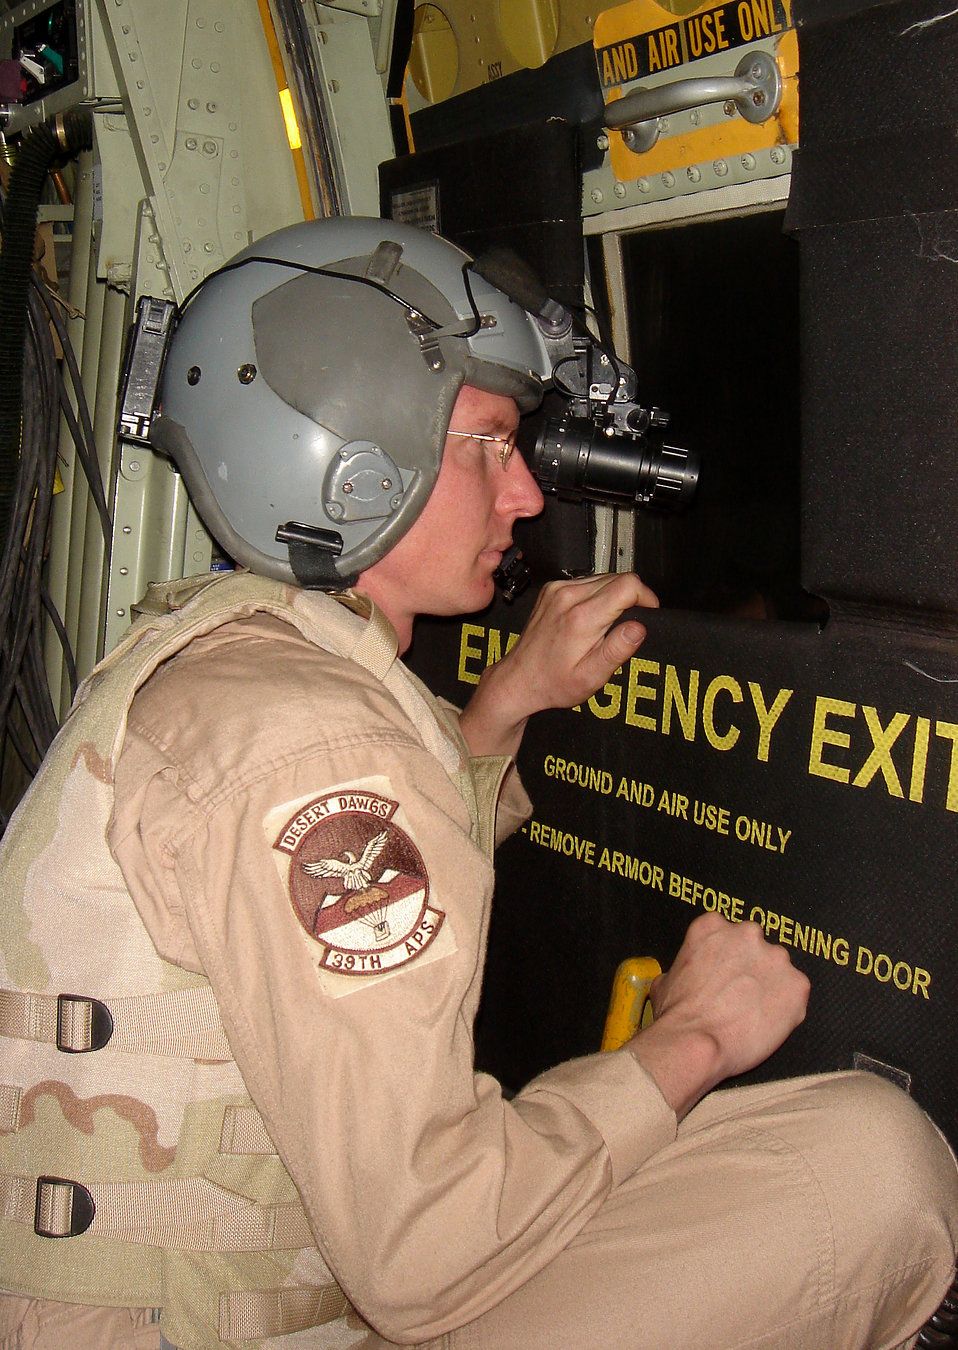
Loadmasters heart of C-130 operations

SOUTHWEST ASIA (AFPN) -- Master Sgt. Thomas Freeman peers out the window with night-vision goggles during a flight into Iraq. He is a loadmaster with the 746th Expeditionary Airlift Squadron and is deployed from the 302nd Airlift Wing at Peterson Air Force Base, Colo.